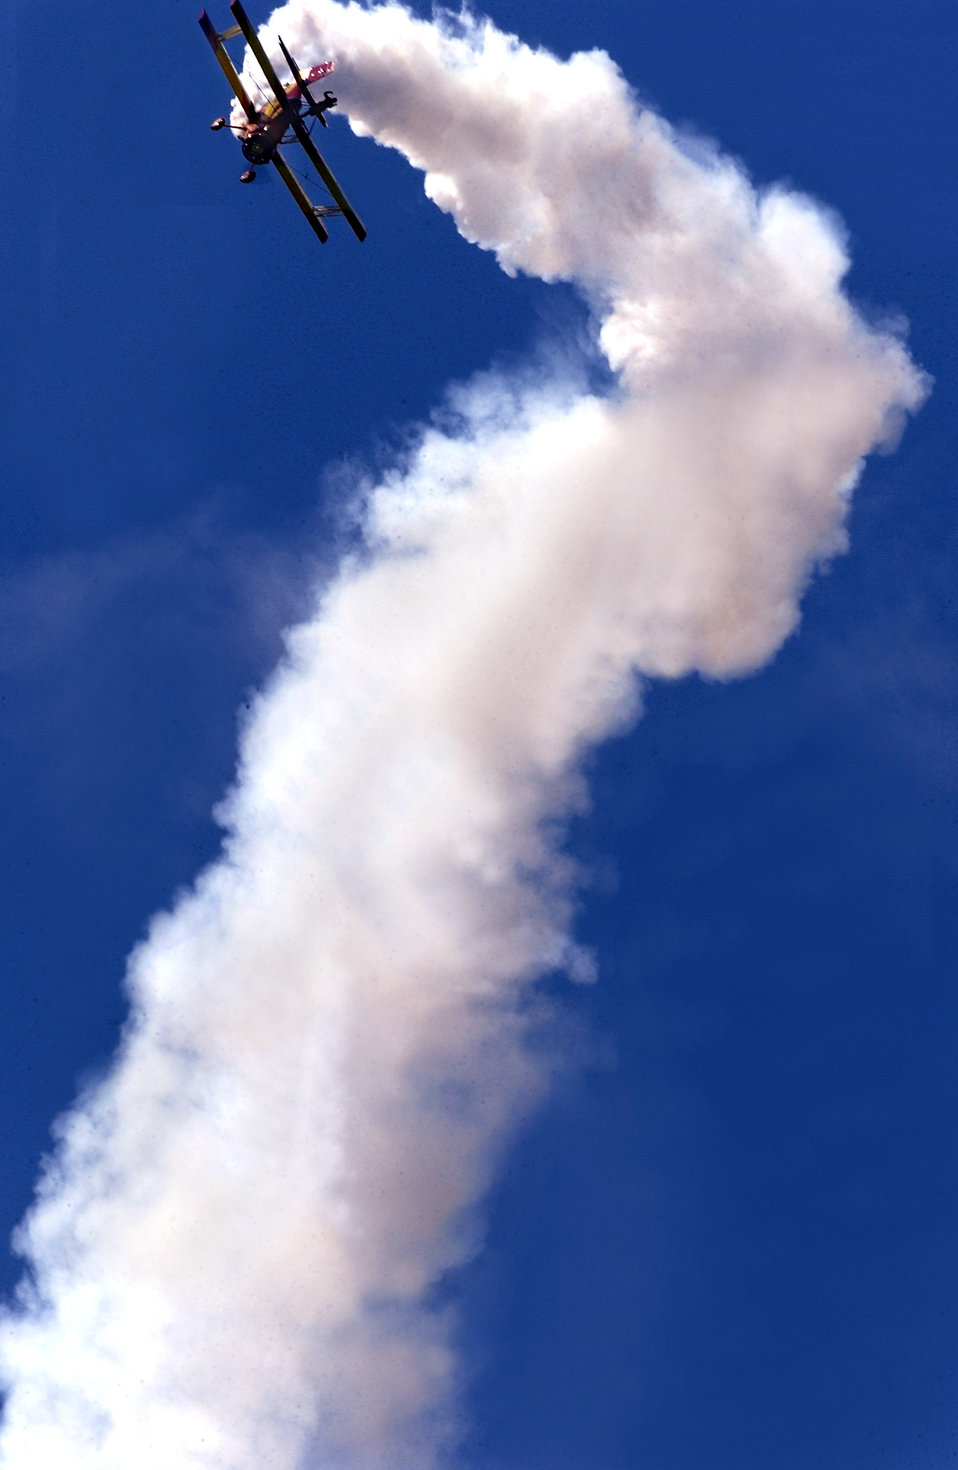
Air Power Over Hampton Roads Air Show 2006

Gene Soucy, known as